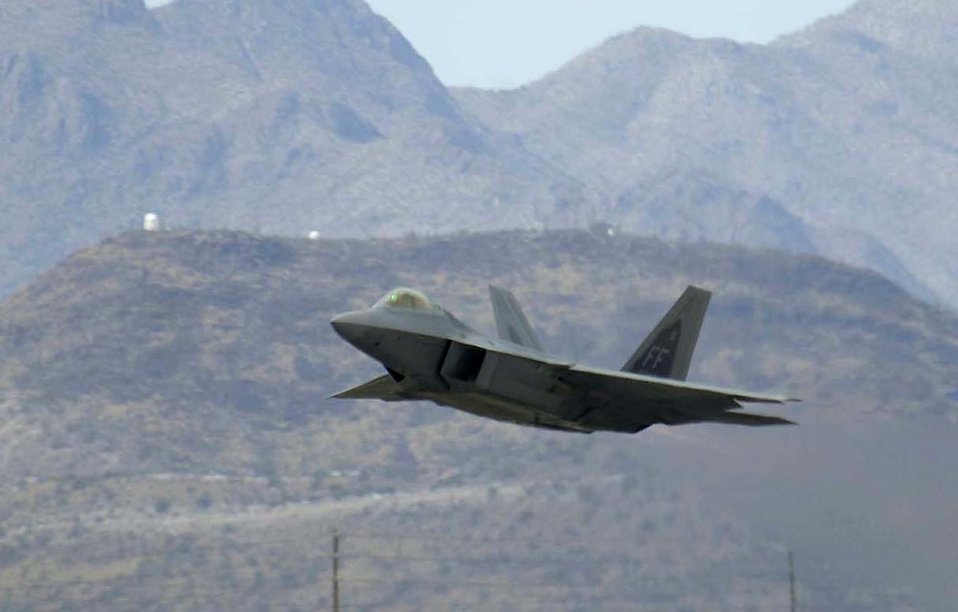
Air power purchasing process continues to improve

Working alongside the manufacturer, Lockheed Martin Aeronautics Company, during production of the F-22 Raptor, Air Combat Command's Raptor Acceptance Team is a geographically separated unit whose mission is to provide gaining units with